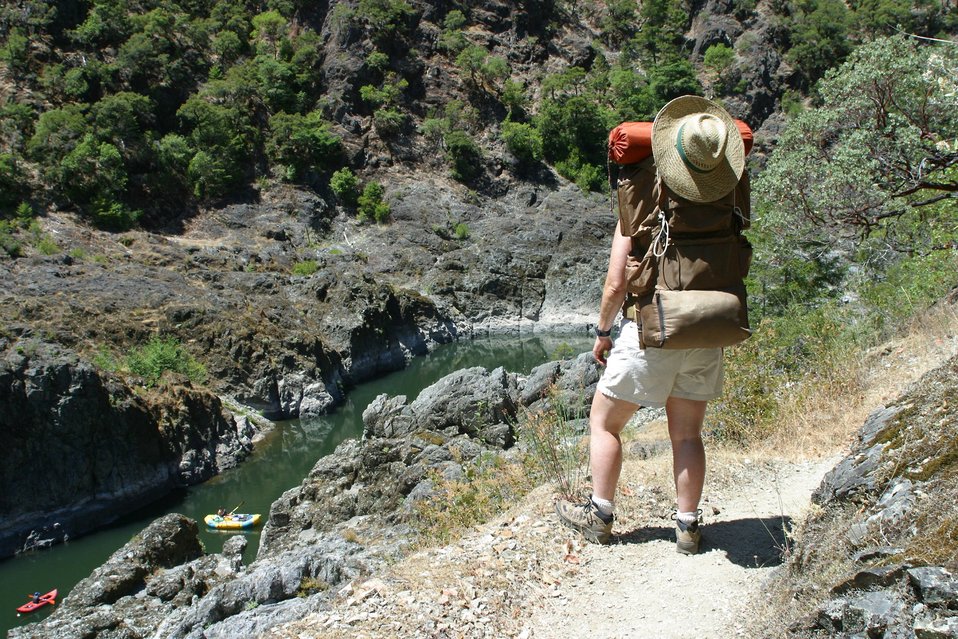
Hiking the Rogue River Trail between Mule Creek and Blossom Rapids.